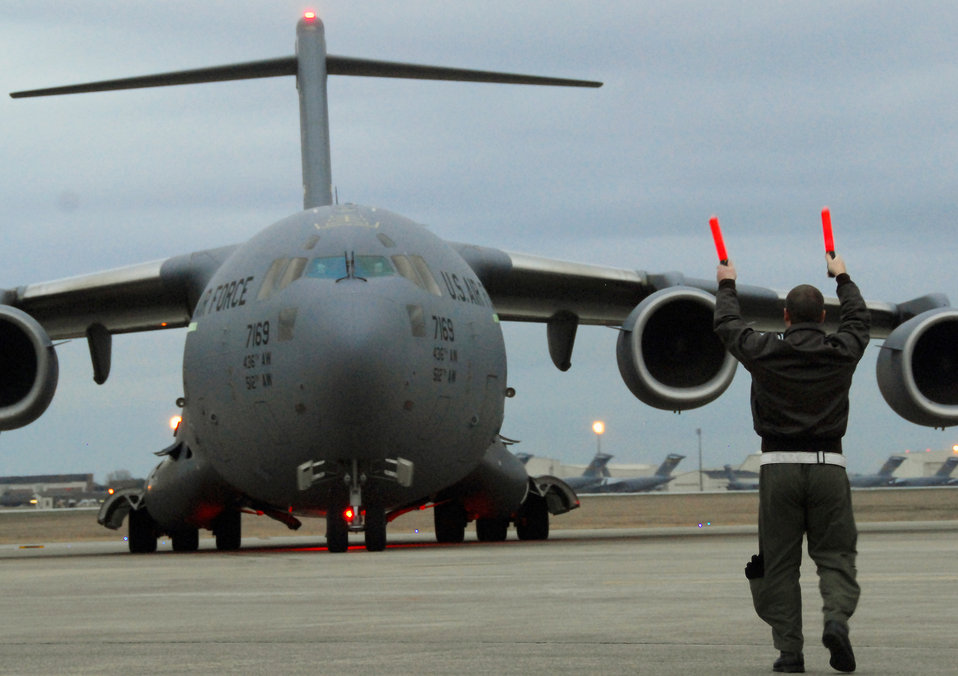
Charleston Airmen serve as liaison in Haitian repatriation effort

Capt. Tony Mione marshals a C-17 Globemaster III transporting evacuees Feb. 9, 2010, from Haiti to Charleston International Airport in South Carolina. Aircraft on evacuations missions arriving at the airport are limited to 75 passengers per mission. As of Feb. 9, more than 700 evacuees had transited the airport. Captain Mione is the deputy chief of Wing Plans for the 437th Airlift Wing.